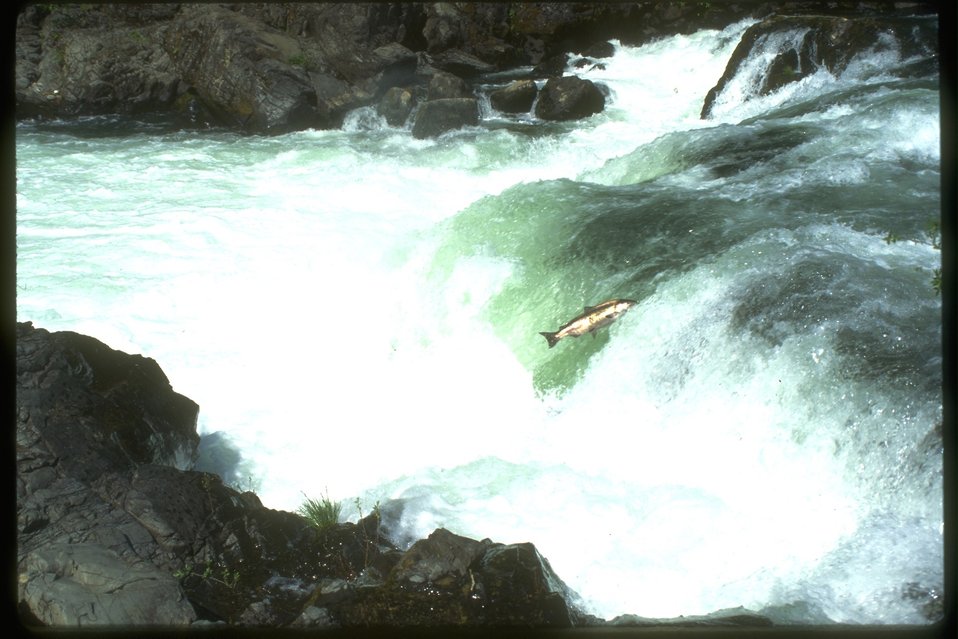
Chinook Salmon jumping in the middle of Deadline Falls of the North Umpqua River.